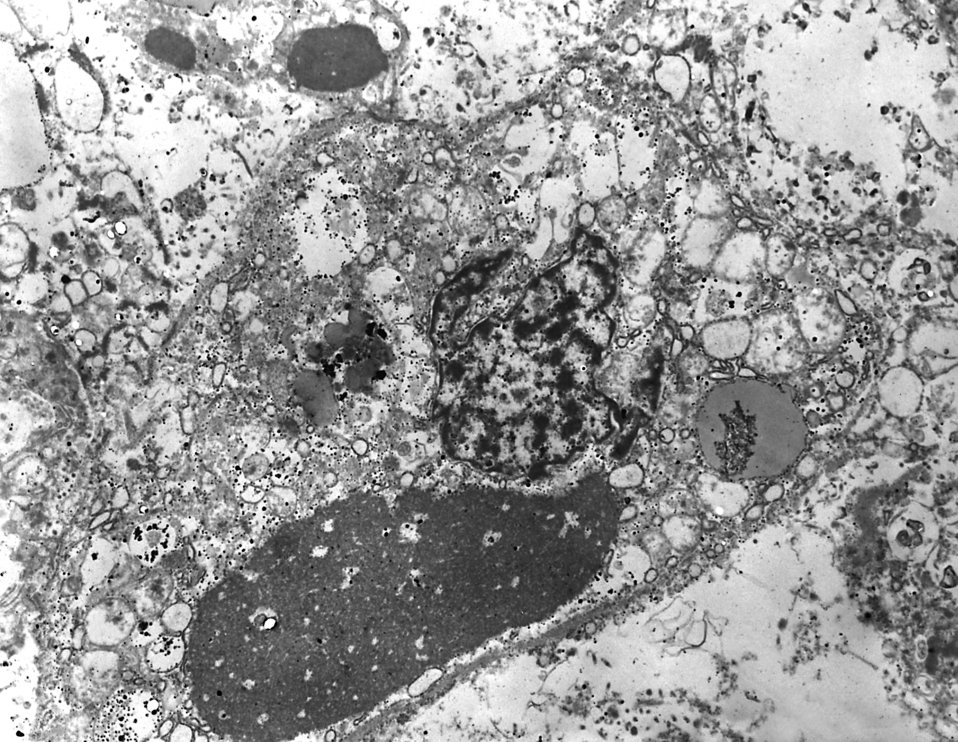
A transmission electron micrograph of the Ebola virus in a specimen of human liver tissue; magnified 4000X.